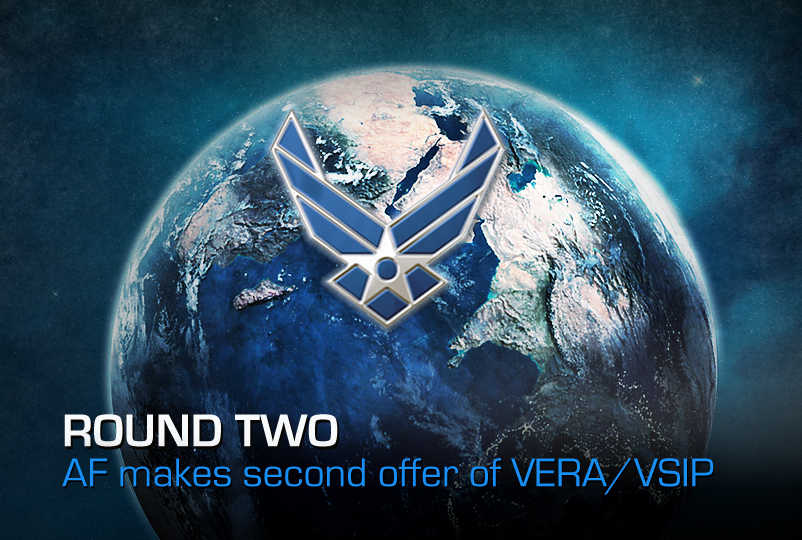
Round Two